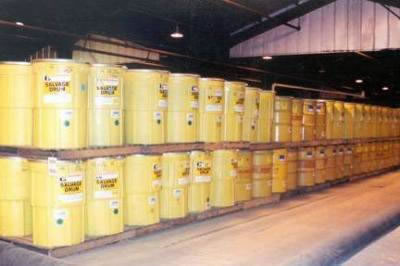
Stored legacy waste at Paducah.